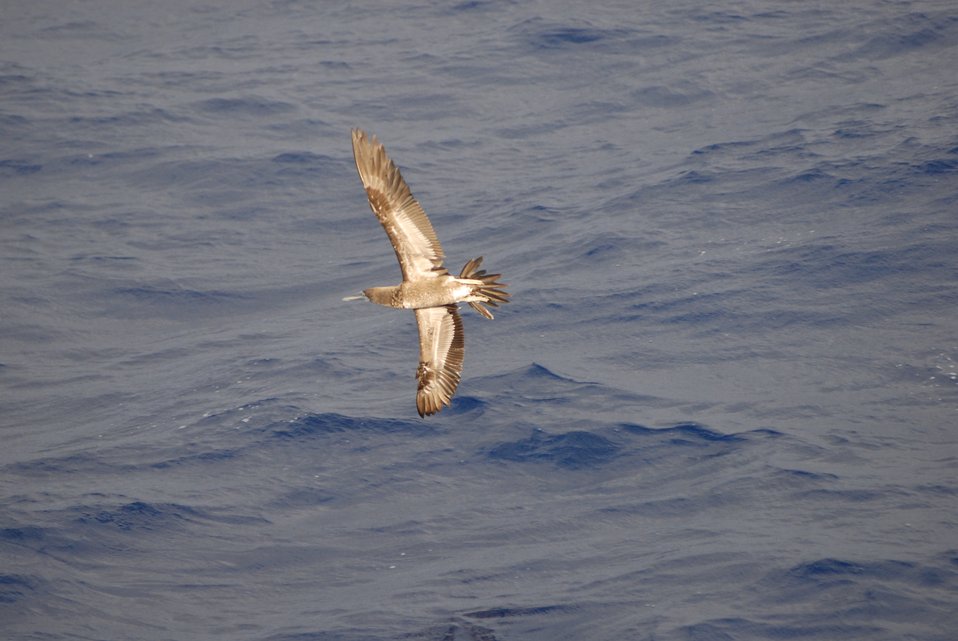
Booby in flight.